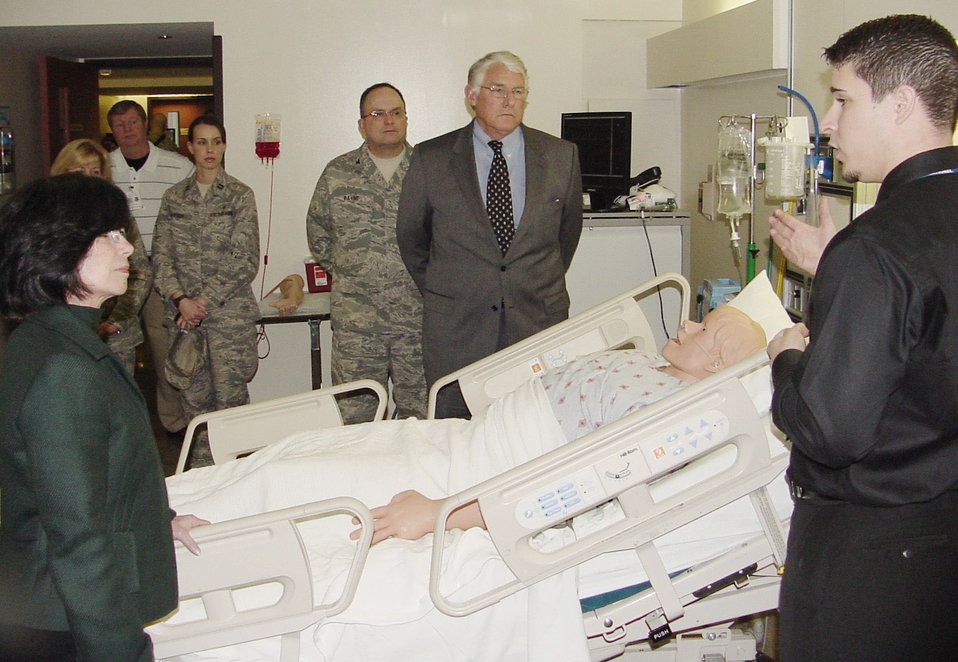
Center uses innovative methods to improve patient safety

Dr. Stephen Jones (center) and Dr. Gail Wilensky receive a briefing on the interactive human patient simulator from Col. (Dr.) Lee Payne and Ivan Fronefield during a visit to the David Grant Air Force Medical Center's Simulation Center March 11 at Travis Air Force Base, Calif. Dr. Jones is the principal deputy assistant secretary of defense for health affairs, and Dr. Wilensky is the Defense Health Board president. Dr. Payne is the 60th Medical Group commander, and Mr. Fronefield is the SimCenter manager.